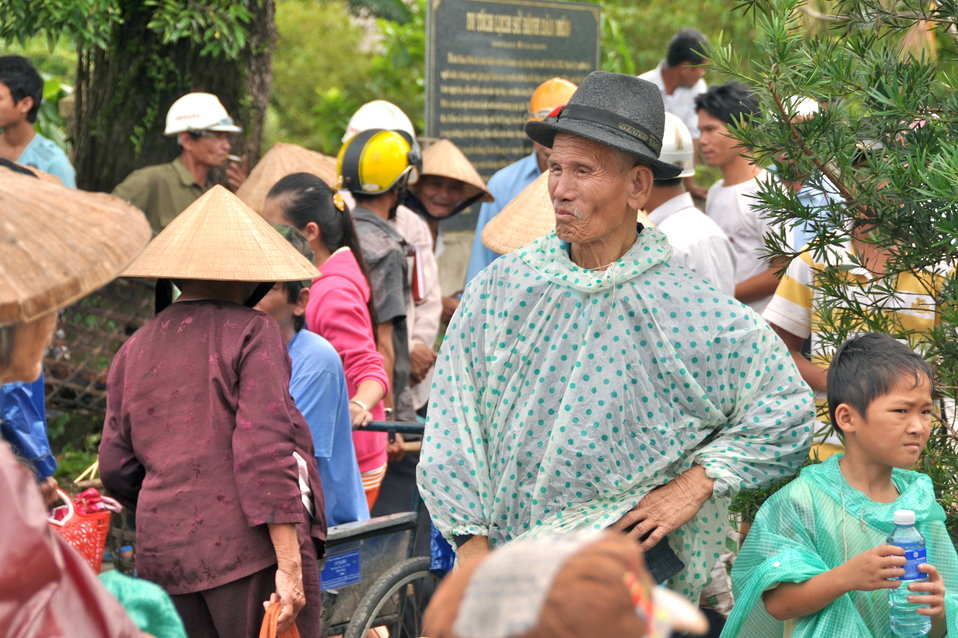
USAID and Save the Children support community evacuation drill and emergency preparedness in central Vietnam

Loc An Commune, Phu Loc District, Thua Thien Hue Province
December 4, 2012, Photo: Richard Nyberg, @USAIDVietnam